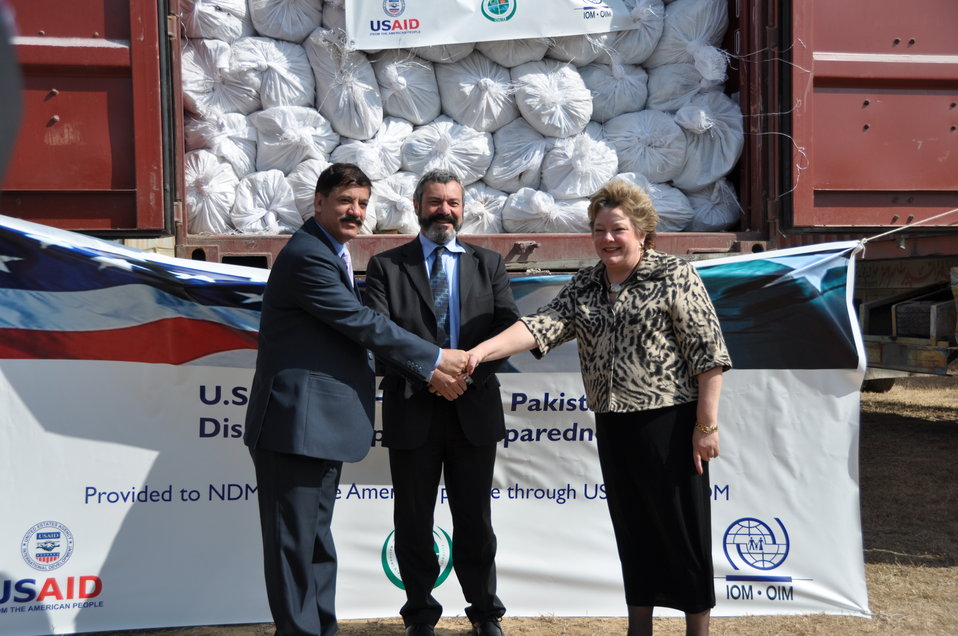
U.S. Agency for International Development (USAID) Deputy Director Karen Freeman (on the right) shakes hands with NDMA’s Brigadier Sajid Naeem (on the left) at the handover of 858 tents by the U.S. Government to the Government of Pakistan.

For more information on the U.S. assistance related to the 2010 and 2011, please see

www.youtube.com/user/USAIDPakistan?feature=guide#p/u/4/-K...
www.youtube.com/user/USAIDPakistan?feature=guide#p/u/5/JG...
www.youtube.com/user/USAIDPakistan?feature=guide#p/u/7/nh...
www.youtube.com/user/USAIDPakistan?feature=guide#p/u/8/Jr...
www.youtube.com/user/USAIDPakistan?feature=guide#p/u/9/gZ...
www.youtube.com/user/USAIDPakistan?feature=guide#p/u/12/q...
www.youtube.com/user/USAIDPakistan?feature=guide#p/u/20/v...

Or Visit USAID
pakistan.usaid.gov

Check our videos and photos on YouTube and Flickr:
www.youtube.com/user/USAIDPakistan
www.flickr.com/photos/usaid pakistan